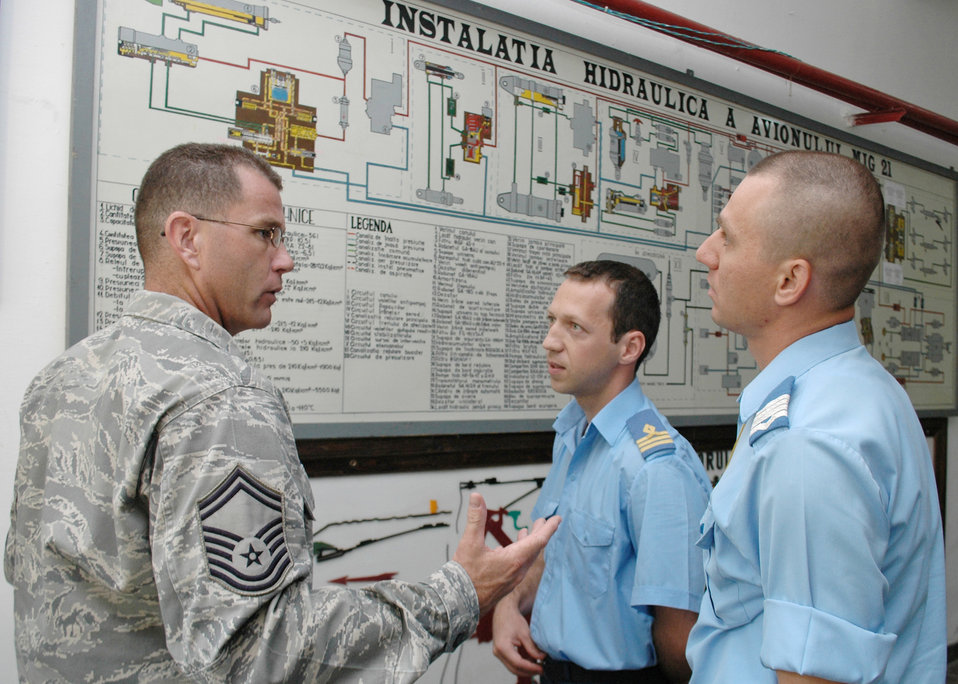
U.S., Romanian Air Forces discuss aircraft maintenance

Senior Master Sgt. Timothy Kellner asks Romanian Air Force Warrant Officer Second Class Dima Valentin, (far right), questions about the hydraulic system for the MiG-21 Lancer Aug. 25, 2009 in Boboc, Romania. Sergeant Kellner's visit to the Traian Vuia Air Force Warrant Officer and NCO Military School, is part of a three-person U.S. Air Forces in Europe maintenance NCO training program traveling contact team who met with Romanian air force aircraft maintainers and warrant officer and NCO school instructors Aug. 25 through 28. Sergeant Kellner is the 31st Maintenance Group quality assurance superintendent.